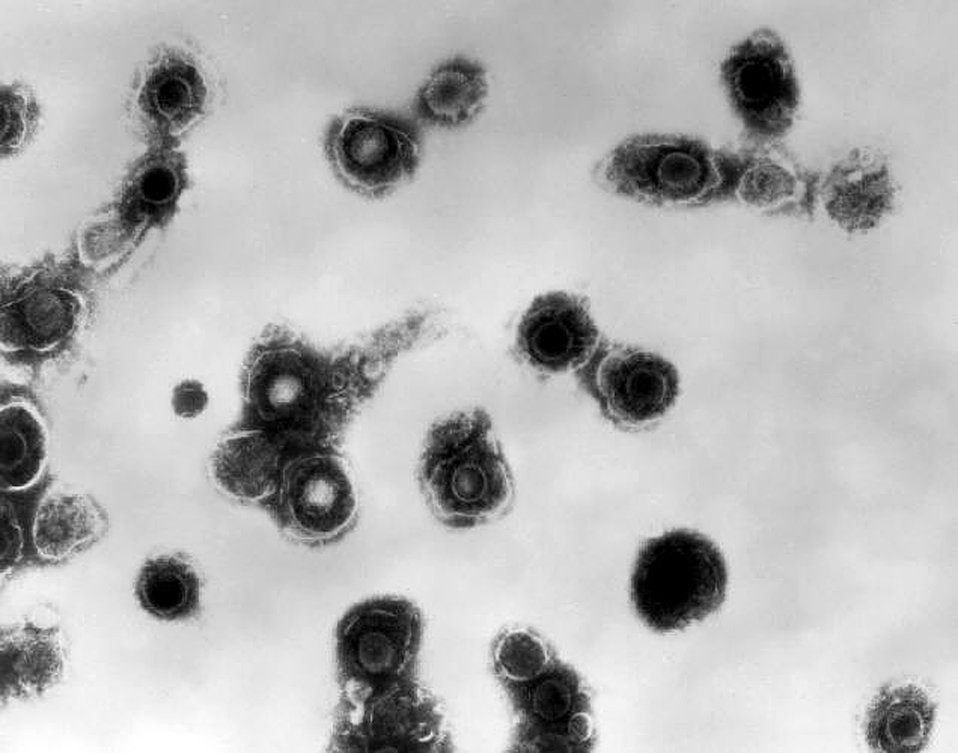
Transmission electron micrograph of varicella-zoster virions from vesicle fluid of patient with chickenpox.